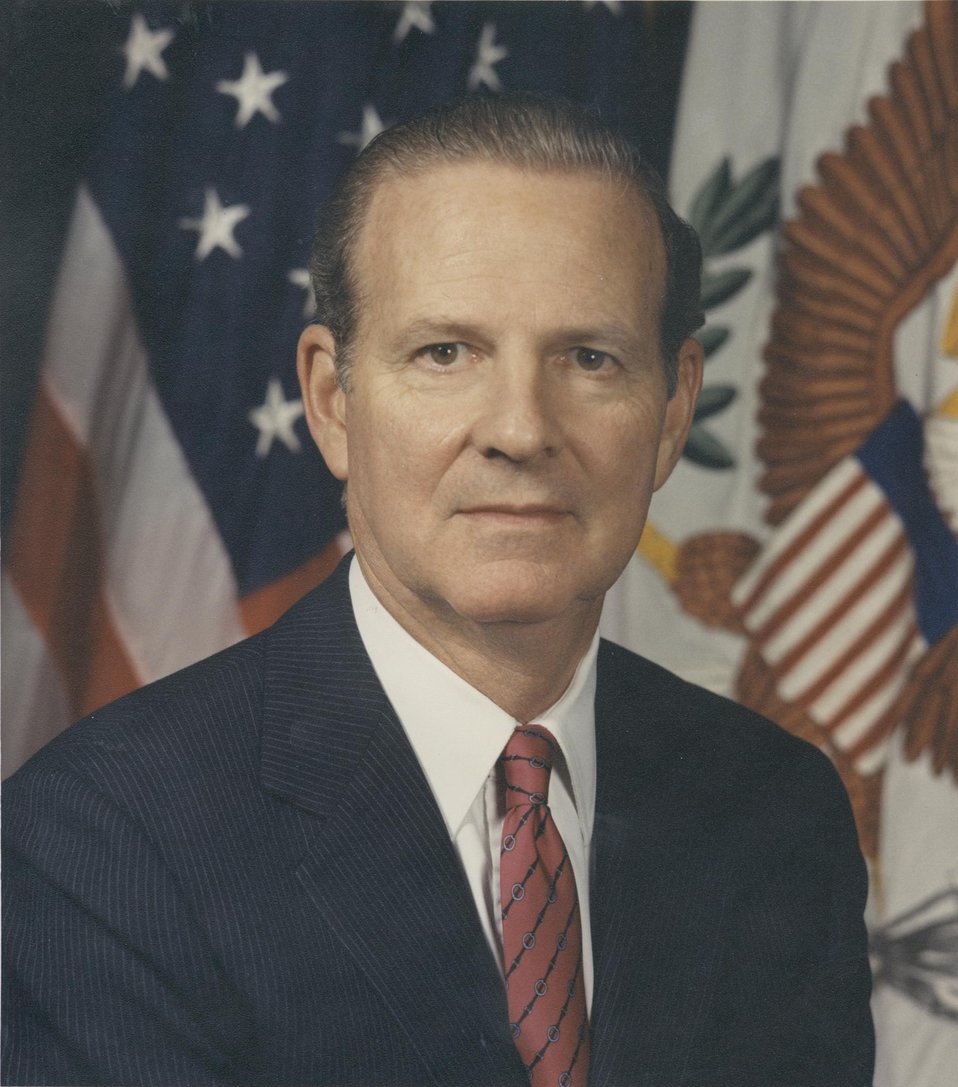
James A. Baker III, U.S. Secretary of State, January 25, 1989 to August 23, 1992